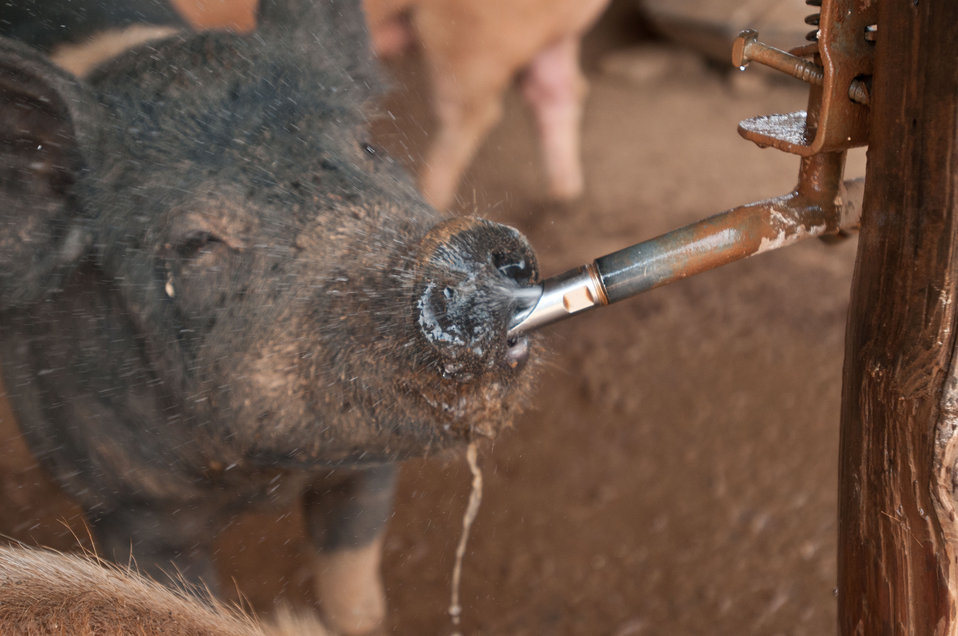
On hot days, pigs figure out how to spray the water on the ground to make a mud wallow at Keenbell Farm, where they are pasture raised by 3rd generation farmer CJ Isbell in Rockville, VA, on Friday, May 6, 2011. The farm was established in 1951, and produces grass-fed beef, pastured pork, and free-range eggs beyond organic standards. Keenbell Farms pork products range from sausage, to bacon, pork chops, roasts, bratwurst, and many more. A majority of their diet is grass and roots. They are offered corn, soybean, minerals, and a hay mixture that was developed by the farm. Raising the pigs on pastures reduces odor problems, and avoids hazardous waste issues by distributing the manure. Pastures are rotated at least, every 90 days to allow the grass and land to re-grow. Keenbell and other farms produce meat products for Fall Line Farms food hub that offer a wide variety of household food staples and specialty items. Members can pick their customized orders from an ever changing inventory of fruits, vegetables, meats, soaps, eggs, cheeses, flowers, honey, pastas, sauces, syrups, baked goods, mushrooms, flour and grains. Suppliers post what they have to sell on Lulus Local Food online listing where customers can make their selection. Every Thursday, suppliers team up to deliver customized orders to, one of several pick-up points, designated by the customer in or around the Richmond, VA area.